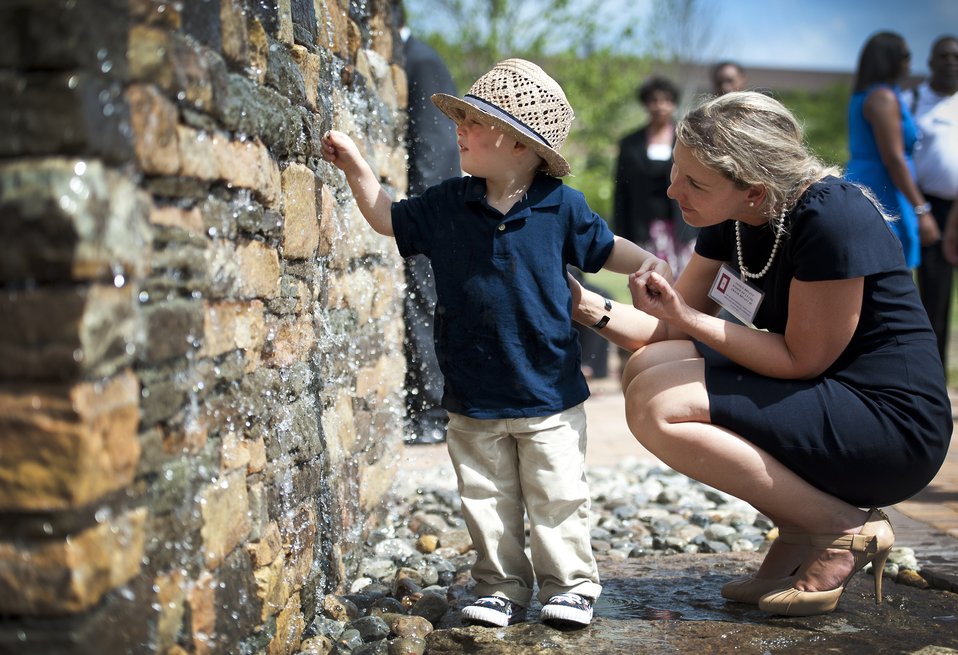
Air Advisor Memorial dedication

Sean Bryant and his mother Janice get a close view of the waterfall at the Air Advisor Memorial at Joint Base McGuire-Dix-Lakehurst, N.J., July 27, 2012. Sean is the son of fallen Air Force air advisor Lt. Col. Frank Bryant Jr., who is one of nine air advisors killed Afghanistan on April 27, 2011.